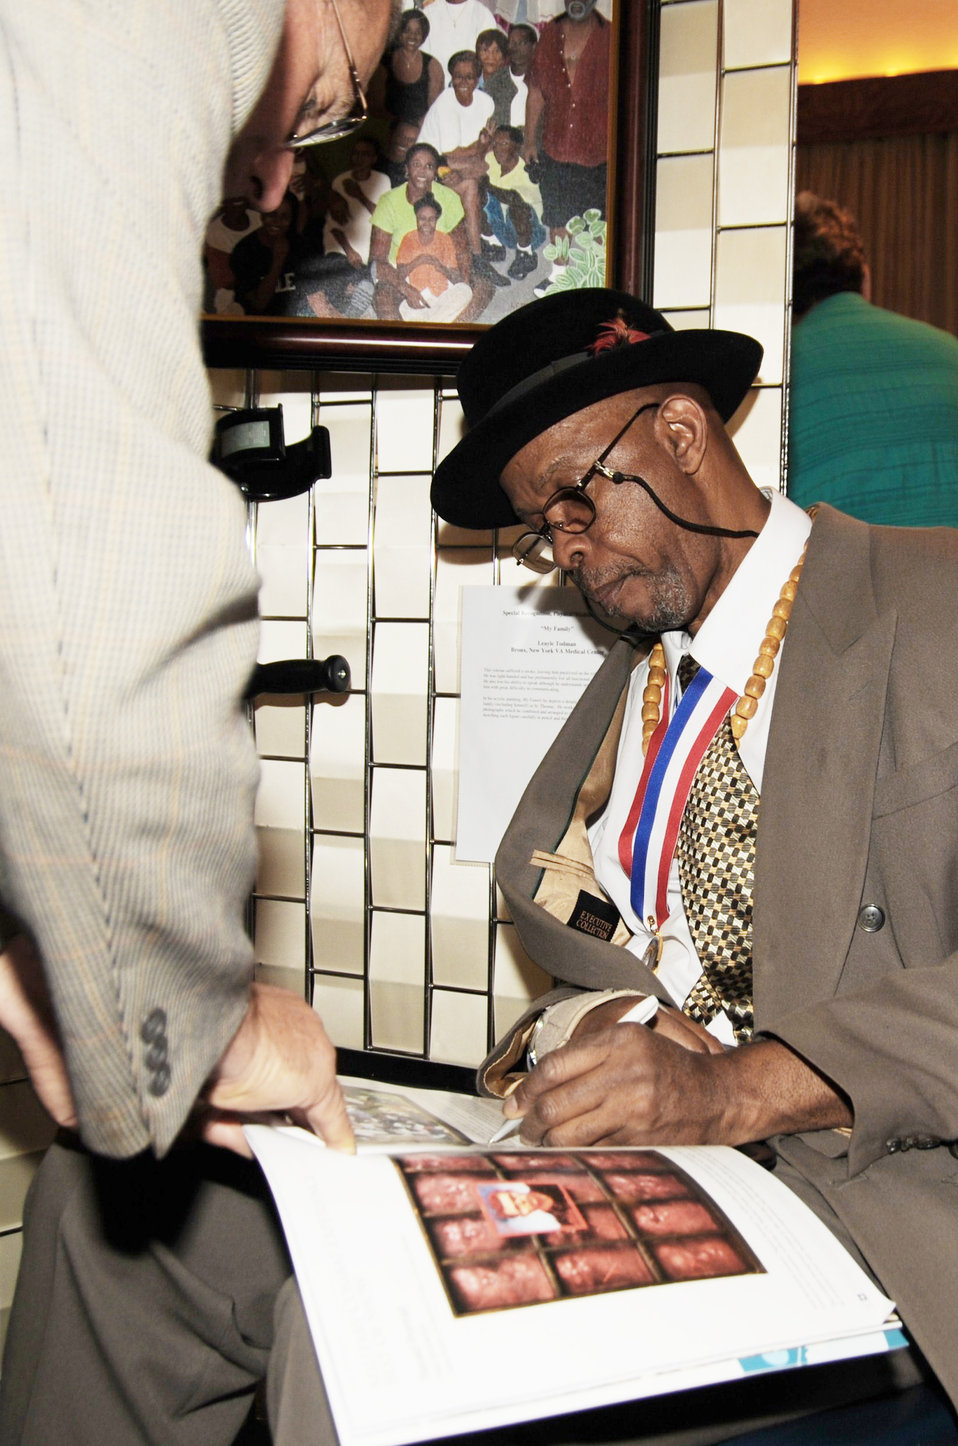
Veterans show true colors

Army veteran Leayle Todman signs a photograph of his artwork for an individual during the 2009 National Veterans Creative Arts Festival Oct. 11, 2009, at the San Antonio Municipal Auditorium in San Antonio. Mr. Todman suffered a stroke, but was still able to paint a detailed portrait of his family displayed behind him.